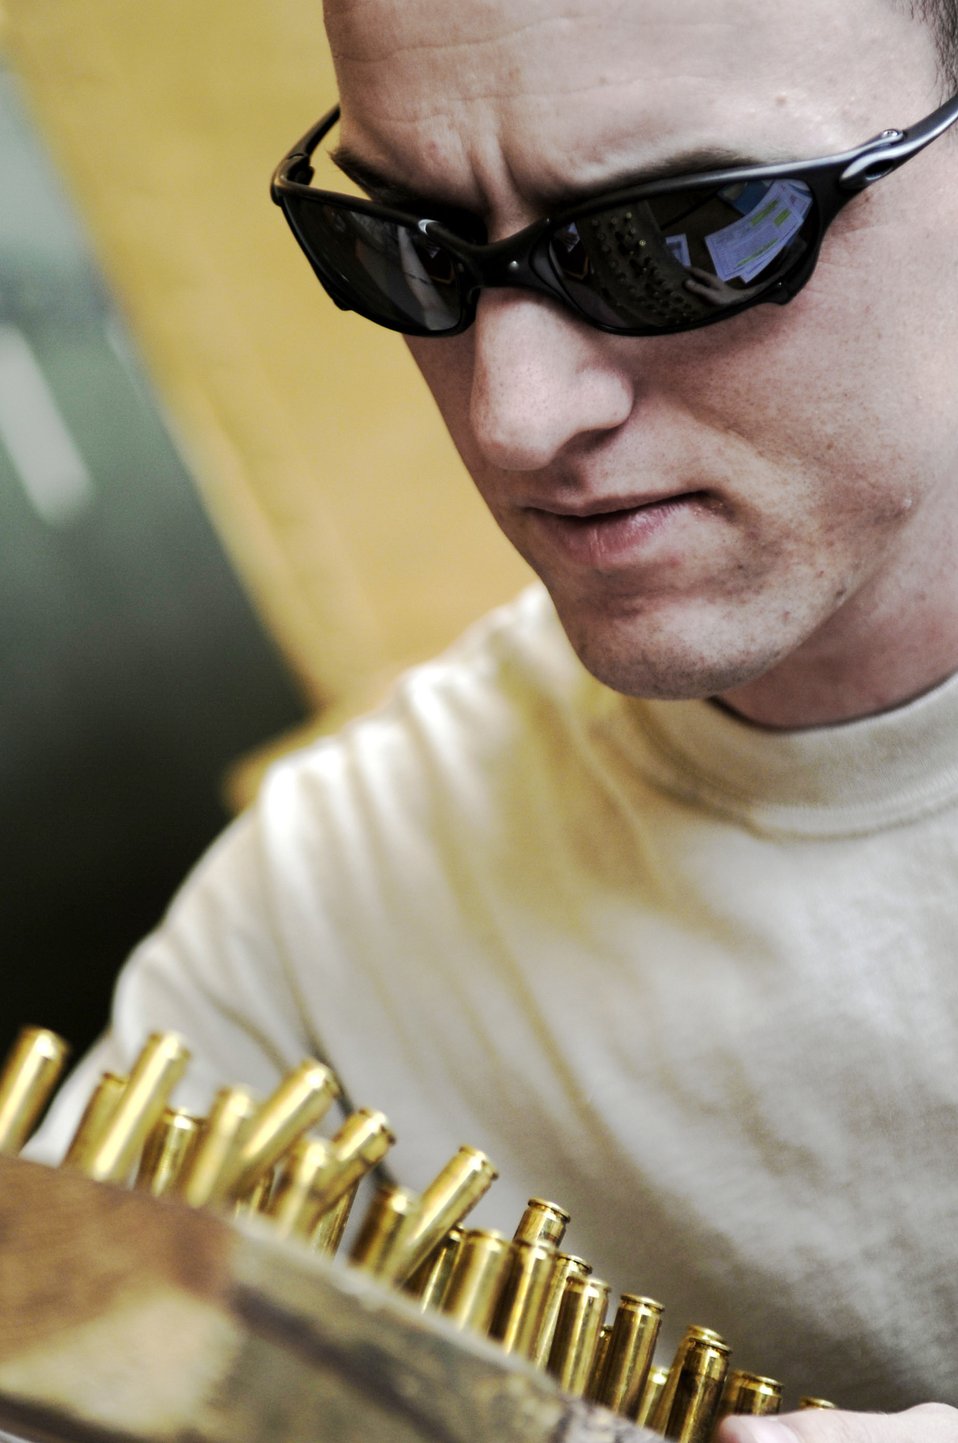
Line 'em up!

Senior Airman Jacob Spencer checks ammunition turned in April 16, 2010, at an air base in Southwest Asia. Airmen Spencer is a combat arms training and maintenance journeyman assigned to the 451st Expeditionary Security Forces Squadron.